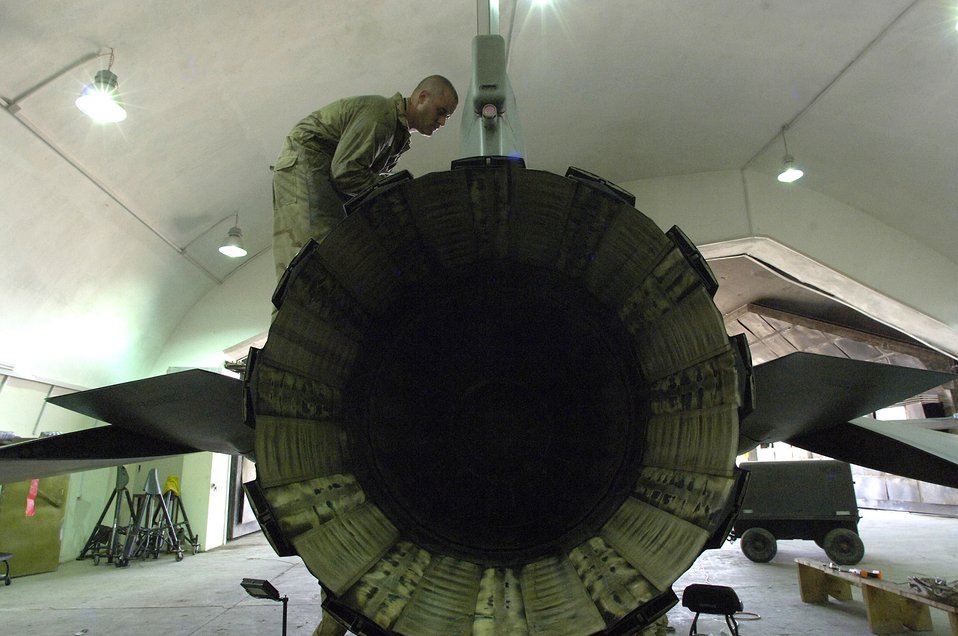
Airpower summary for May 20, 2007

Staff Sgt. Justin Johnson removes panels from an F-16 Fighting Falcon during a routine phase inspection at Balad Air Base, Iraq, recently. Sergeant Johnson is assigned to the 332nd Expeditionary Maintenance Squadron.